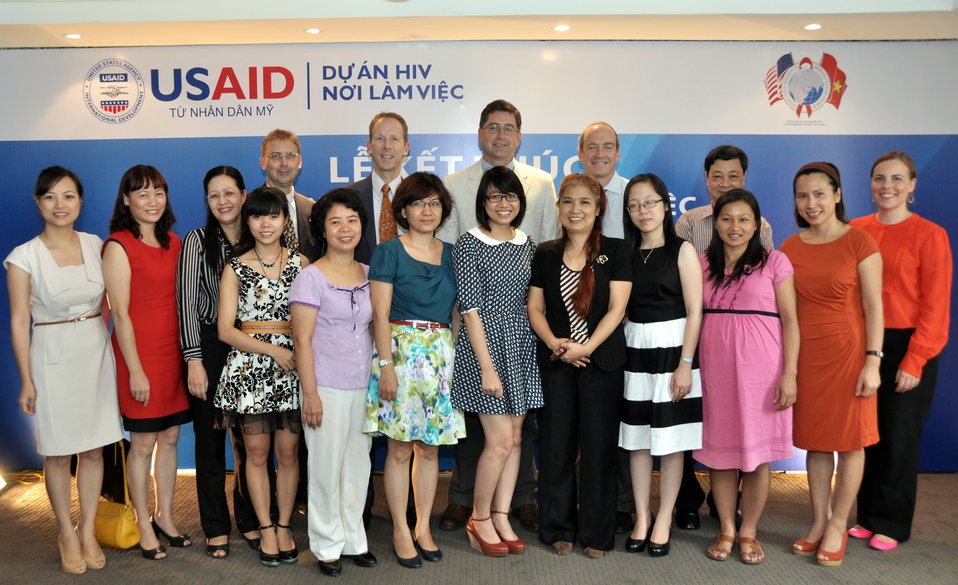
The team at USAID HIV Workplace Project and USAID staff

Hanoi, June 20, 2013.